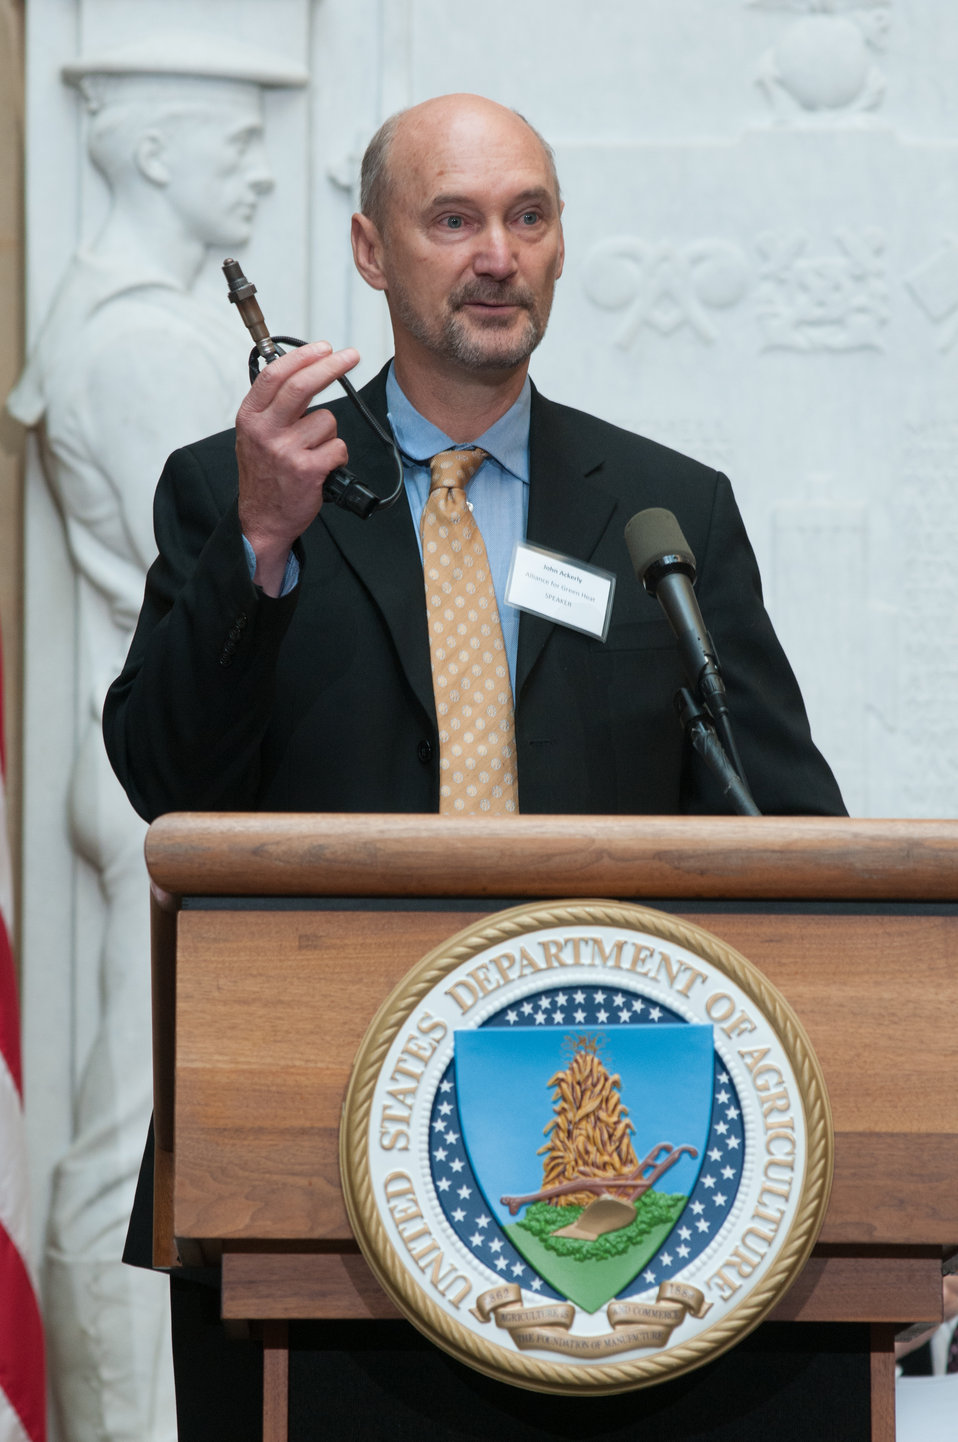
Alliance for Green Heat, President John Ackerly, speaks during the U.S. Department of Agriculture (USDA) Wood Energy Memorandum of Understanding, and awarded wood energy grants announcements event, at the USDA Headquarters, in Washington, D.C., on Wednesday, September 11, 2013. Signing the MOU are partnership leaders Biomass Thermal Energy Council, Executive Director Joseph Seymour; Alliance for Green Heat, President John Ackerly, USDA Agriculture Deputy Secretary Krysta Harden; Pellet Fuels Institute Executive, Director Jennifer Hedrick; Biomass Power Association, President and CEO Bob Cleaves, and Secretary Thomas Vilsack who signed it earlier. Moderating the event is Under Secretary for Rural Development Doug O’Brien.
The partnership agreement focuses on promoting wood energy nationwide as a means to address fire risks, bolster rural economic development, improve air quality, and help meet the Obama Administration’s renewable energy and energy efficiency goals. These organizations support the use of wood energy across the scale of users – from residential users, to commercial and intuitional facilities, to industrial production of heat and or electricity to drive businesses and feed the electrical grid.
Under the terms of the five grants announced by Deputy Secretary Harden, private, state and federal organizations will work together to stimulate the development of additional wood energy projects in their states. Collectively, $2.9 million will be spent o this effort -- $1.1 million on federal funds and $1.8 million in non federal funds. For more information o0n the cooperative agreement program, visit na.fs.fed.us.werc/wood-energy/ USDA Photo by Lance Cheung.